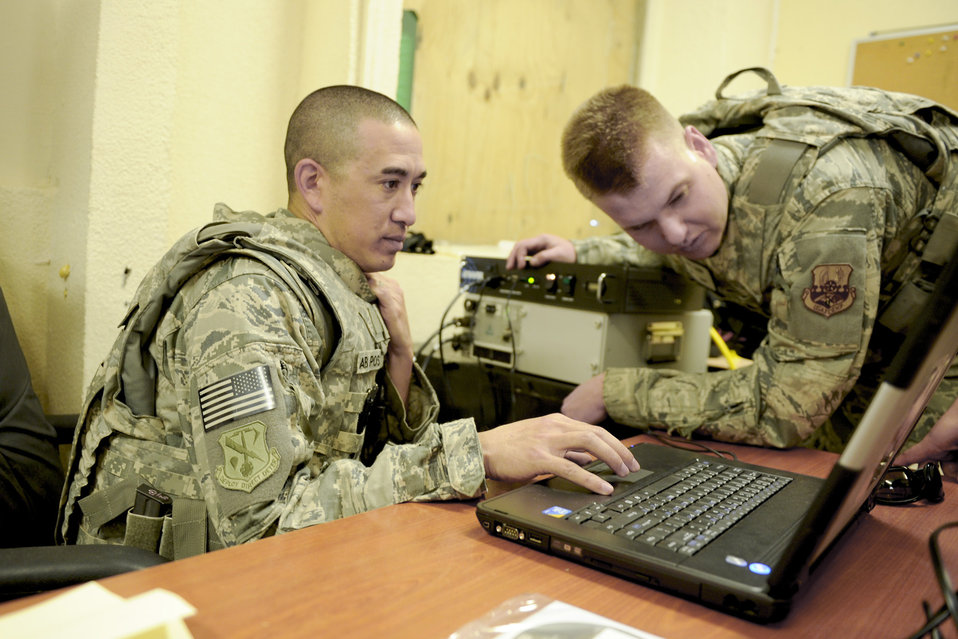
Airmen deliver weather gear to Iraqi air force

Master Sgt. Stephen Hale (left) and Senior Airman Ryan Unger system check a TMQ-53 weather observation system and an Ellason Weather Radar 600 after setting them up at the control tower March 2, 2011, at Qayyarah West Airfield, Iraq. Sergeant Hale and Airman Unger were part of a three-man weather team that traveled from Baghdad to retrieve U.S. Air Force equipment and install a newly purchased system as part of an ongoing process to set up a self-sustained Iraqi military weather service. Sergeant Hale and Airman Unger are from the 22nd Expeditionary Weather Squadron.